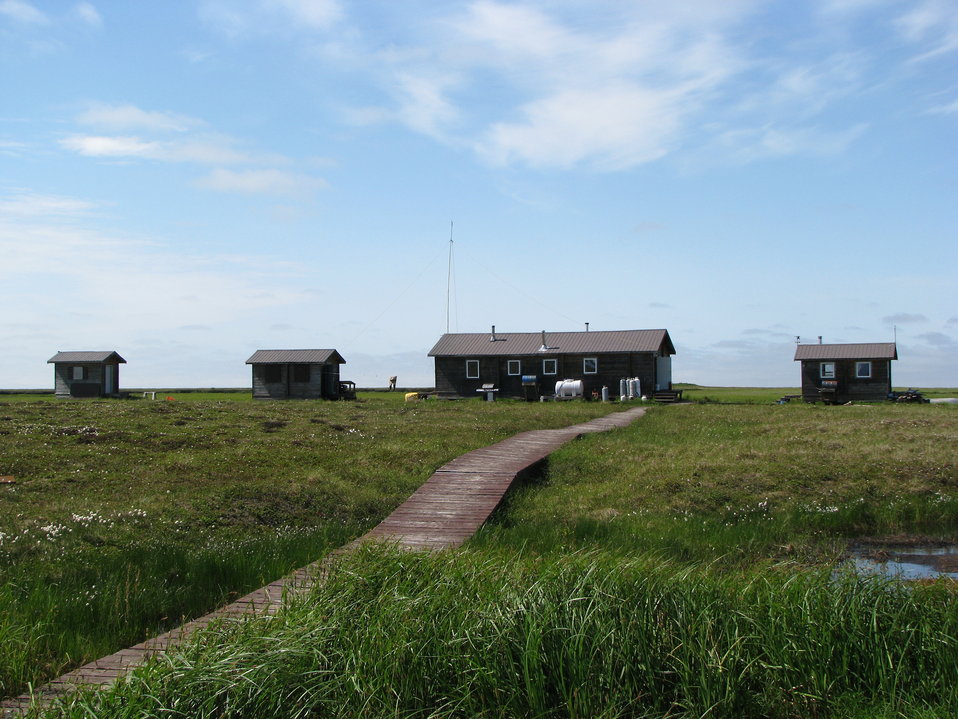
Kanaryarmiut Field Station

This field station has one large cabin and several out buildings that accomidate field staff that are conducting projects in the area during the summer.

USFWS Yukon Delta NWR